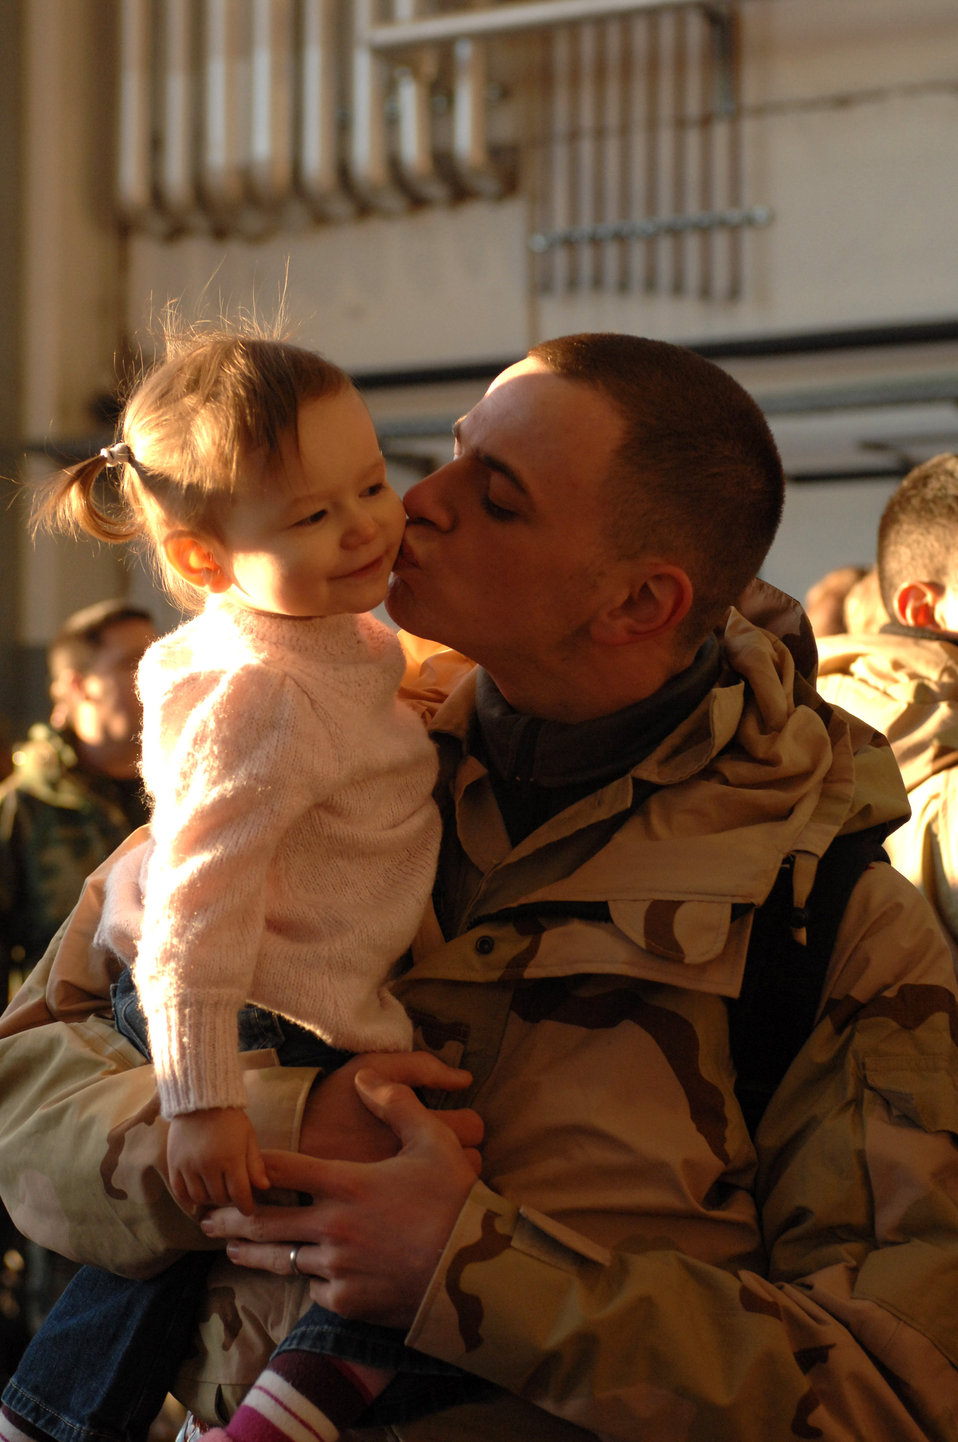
Home at last!

Senior Airman David Morgan kisses his daughter Chloe upon his return from a deployment Feb. 8 in support of Operation Iraqi Freedom. Airman Morgan is with the 52nd Aircraft Maintenance Squadron at Spangdahlem Air Base, Germany.